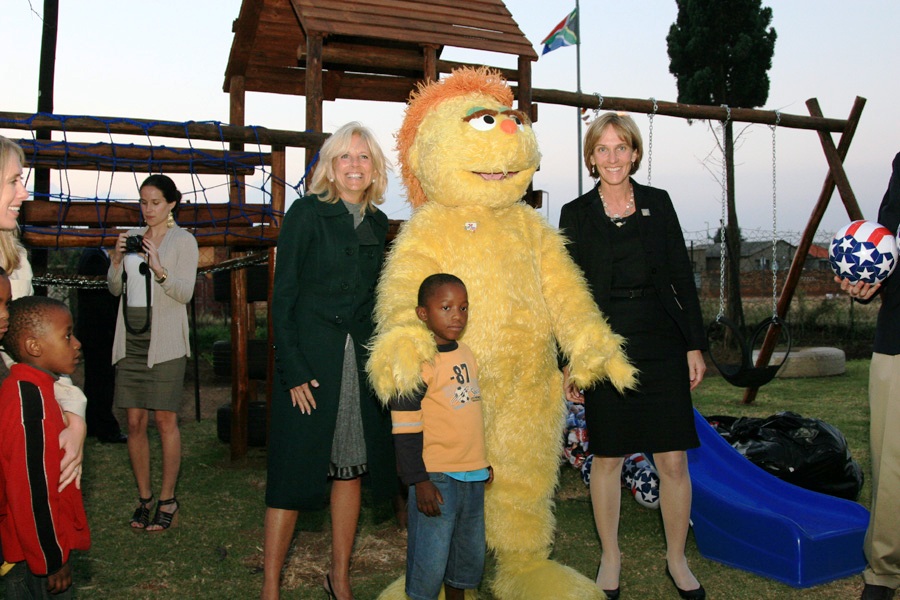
Dr. Jill Biden, Liz Berry Gips, a South African Child, and Kami Pose for a Photo

Dr. Jill Biden, wife of Vice President Joseph Biden, and Liz Berry Gips, wife of U.S. Ambassador to the South Africa Donald H. Gips, pose for a photo with a South African child, and Kami, in Soweto, Johannesburg, South Africa, on June 10, 2010. .Kami is a character on Takalani Sesame ('be happy Sesame' in Venda), which is the South African version of the children's television program Sesame Street.